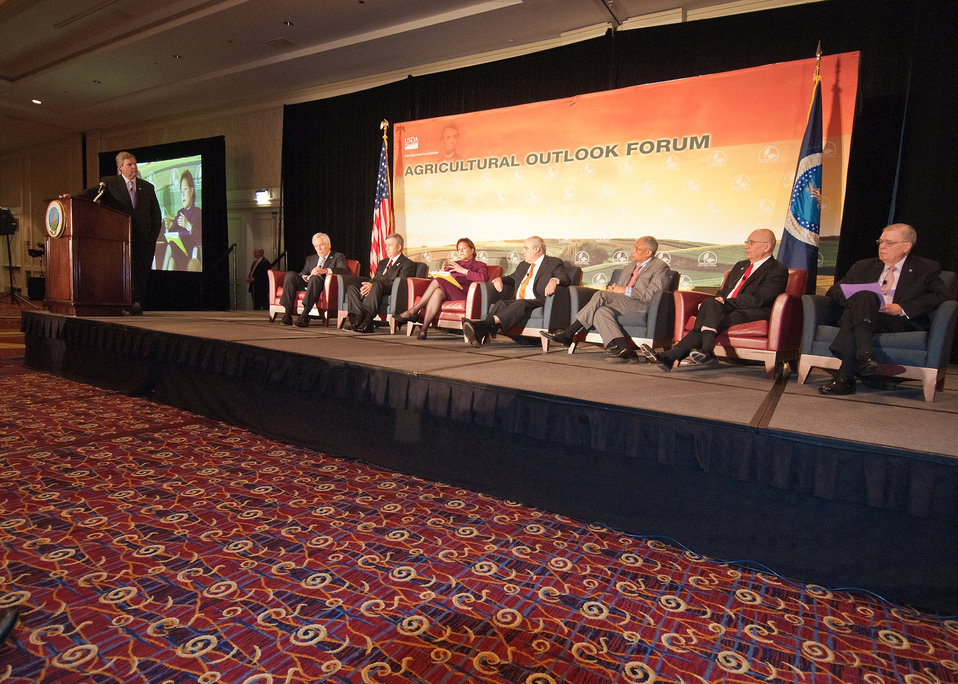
At the 2012 Agricultural Outlook Forum, “Moving Agriculture Forward” in Arlington, VA, held on Thursday, February 23, 2012, 7 former Secretaries of Agriculture sat on the plenary panel “Visions of the Future” moderated by current Agriculture Secretary Tom Vilsack (seated L to R Governor Ed Schafer (ND), Senator Mike Johanns (NE), Ann Veneman, Congressman Dan Glickman (KS), Congressman Mike Espy (MS), Clayton Yeutter, and John Block).